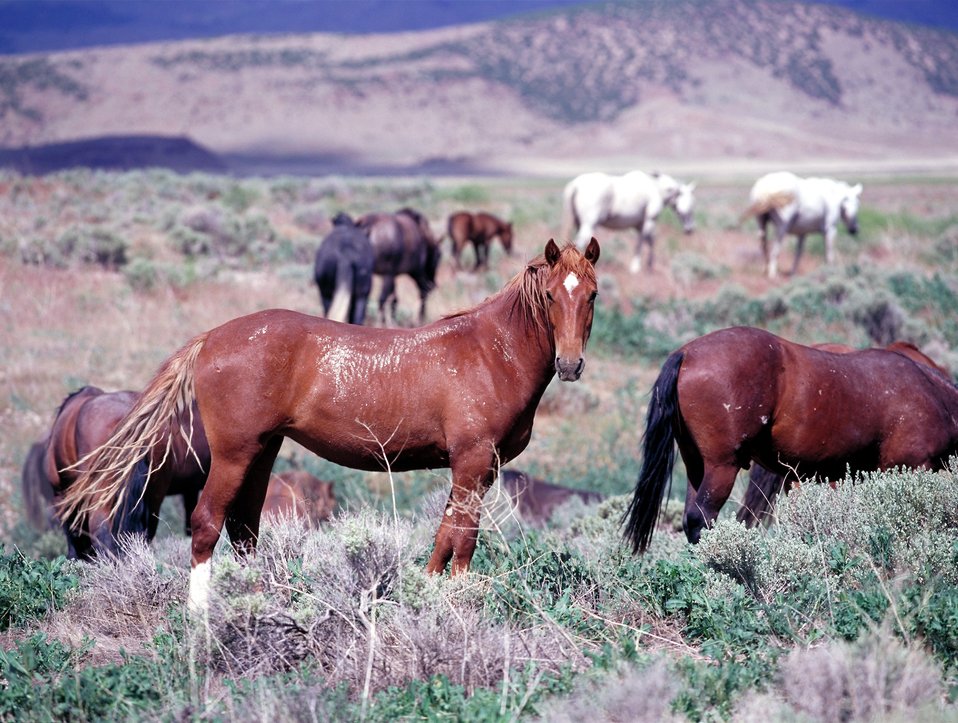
Onaqui Herd near Dugway, Utah.